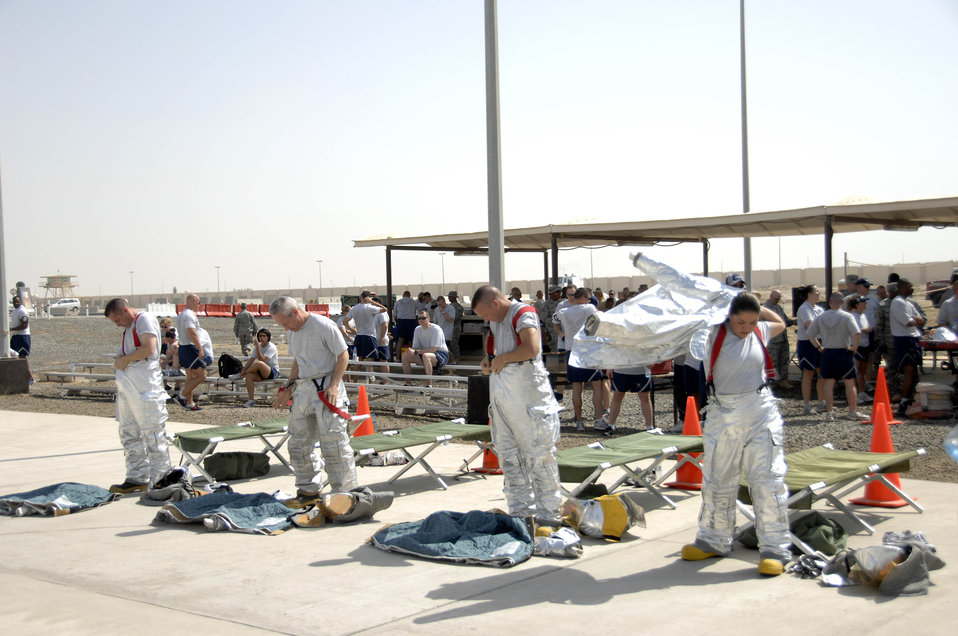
Fire muster challenges Airmen

Members of the 380th Expeditionary Mission Support Group fire muster team don protective suits during the